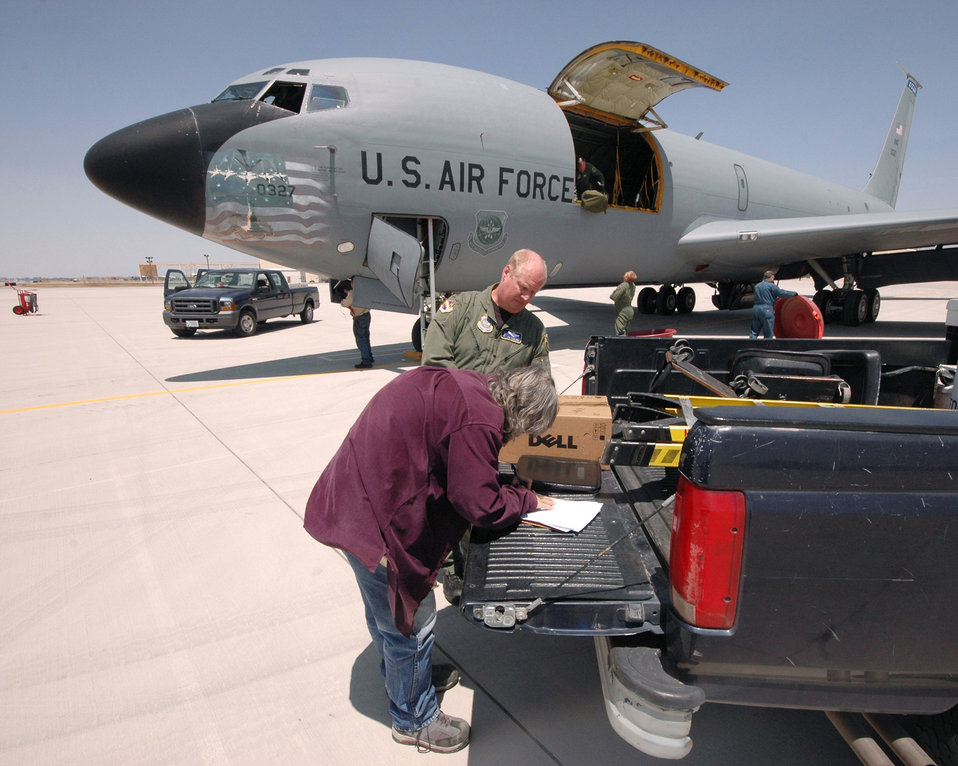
Last KC-135E retires, Air Force officials focus shifts to KC-X

An Air Force KC-135E Stratotanker is received by 309th Aerospace Maintenance and Regeneration Group members in April 2008 at Davis-Monthan Air Force Base, Ariz. The 50-year-old aircraft was delivered to the group for long-term storage at the 2,600-acre facility.